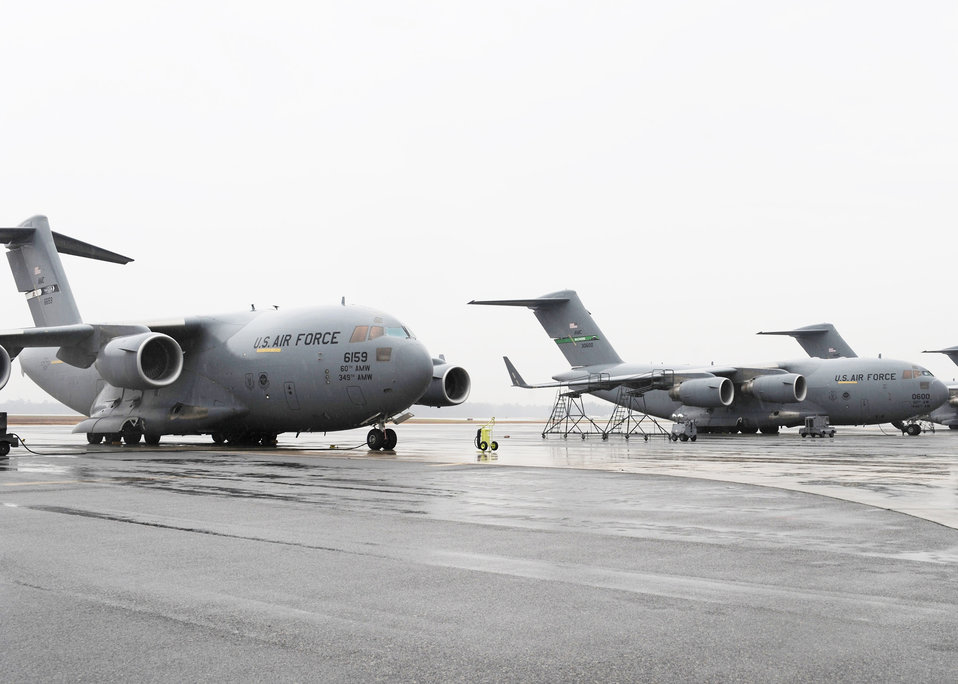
C-17's support Haiti mission

Several C-17 aircraft sit on the Charleston AFB flightline here Jan. 21. The planes were from bases such as Elmendorf, Alaska, Travis, Calif., Hickam, Hawaii and McChord, Wash. The Air Force's airlift capability enables the U.S. to respond immediately to any disaster domestically or worldwide. the U.S. is the only country with an aircraft fleet capable of providing this type of response.